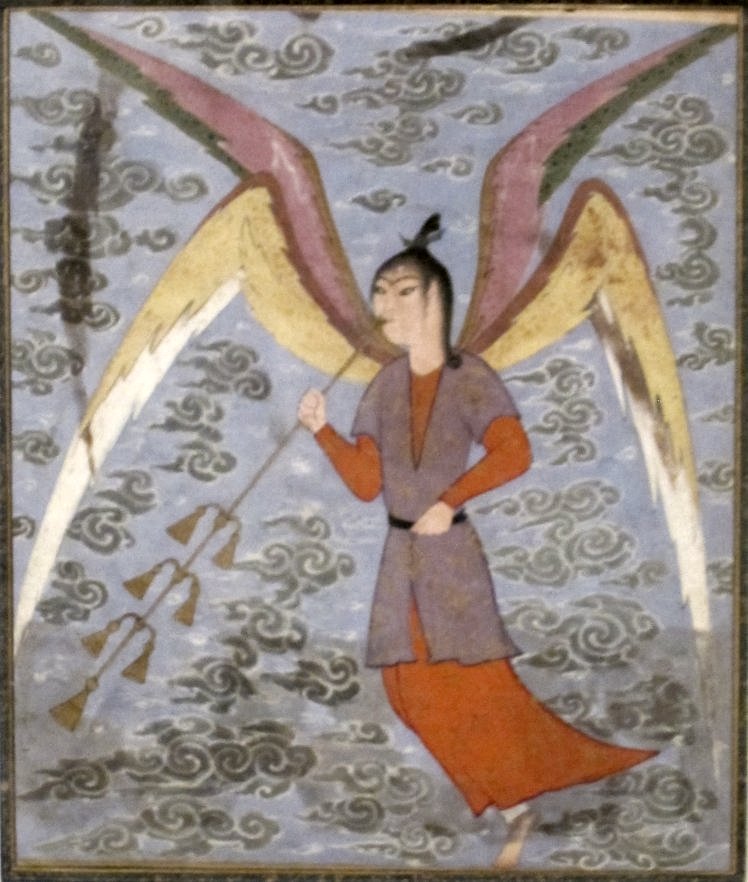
Angel Blowing a Woodwind, ink and opaque watercolor painting from Iran, c. 1500, Honolulu Academy of Arts